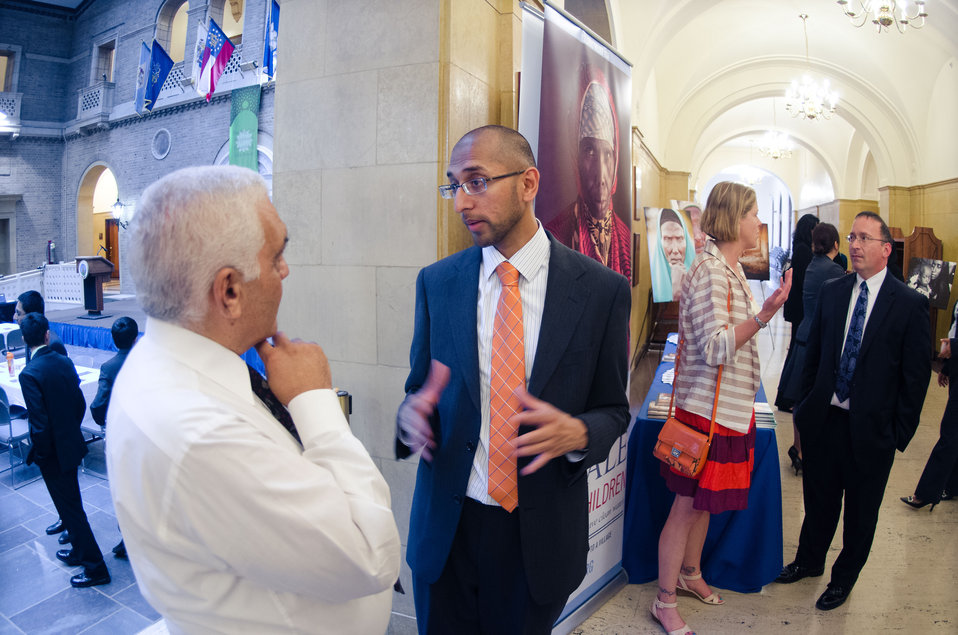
Iftar event, co-sponsored by the Iftar celebration, co-sponsored by the U.S. Department of Agriculture, U.S. Agency for International Development (USAID) and Islamic Relief USA, on Tuesday, August 7, 2012, in the USDA Whitten Building, in Washington, D.C. Ramadan is the month of fasting, intensive prayer, sacrifice and worship for Muslims around the world. Throughout this month, Muslims fast during the day, abstaining from consuming food from dawn to dusk and using this time to purify spiritually. Fasting reminds Muslims of the poverty and hunger suffered by many in the United States and worldwide. It is a connection with those who are hungry not through devotion, but through the many global factors that lead to hunger and famine. Iftar is the meal at which Muslims break their fast at sunset, usually by eating dates, according to the Prophetic tradition.